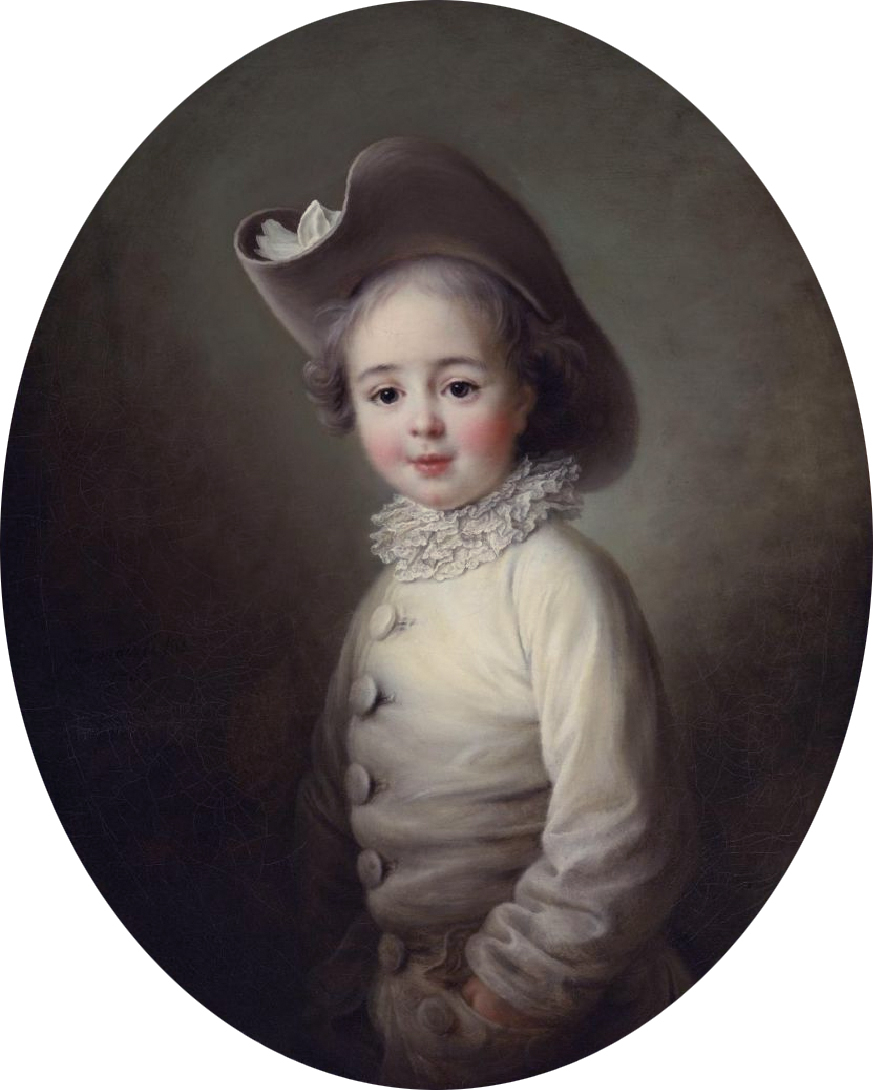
Marie-Jean Hérault de Séchelles by François Hubert Drouais